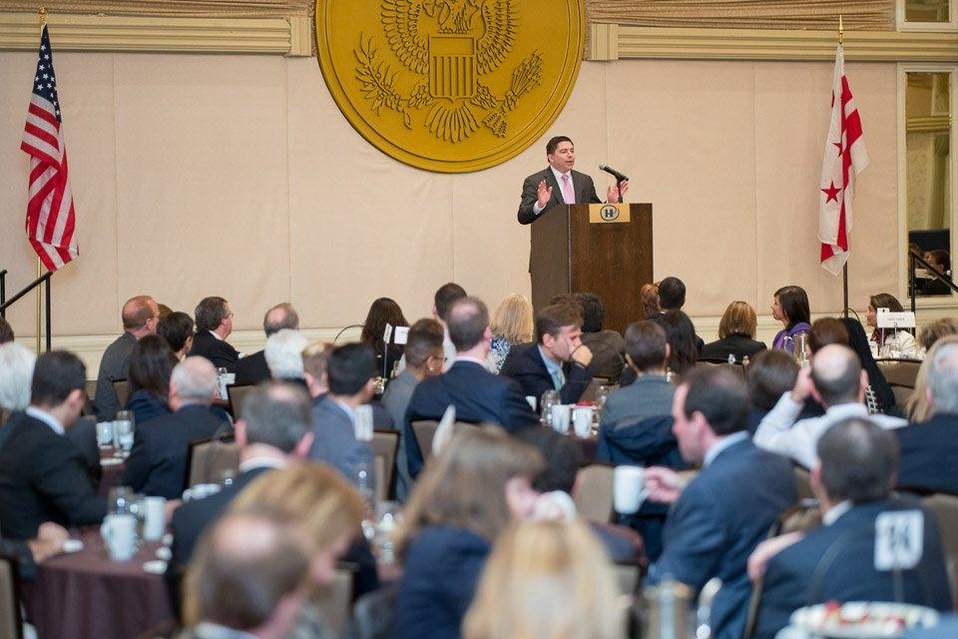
4.1.2014 FCBA Luncheon

Federal Communications Bar Association Luncheon, 4/1/14
Photo by Mark Van Bergh, courtesy of FCBA